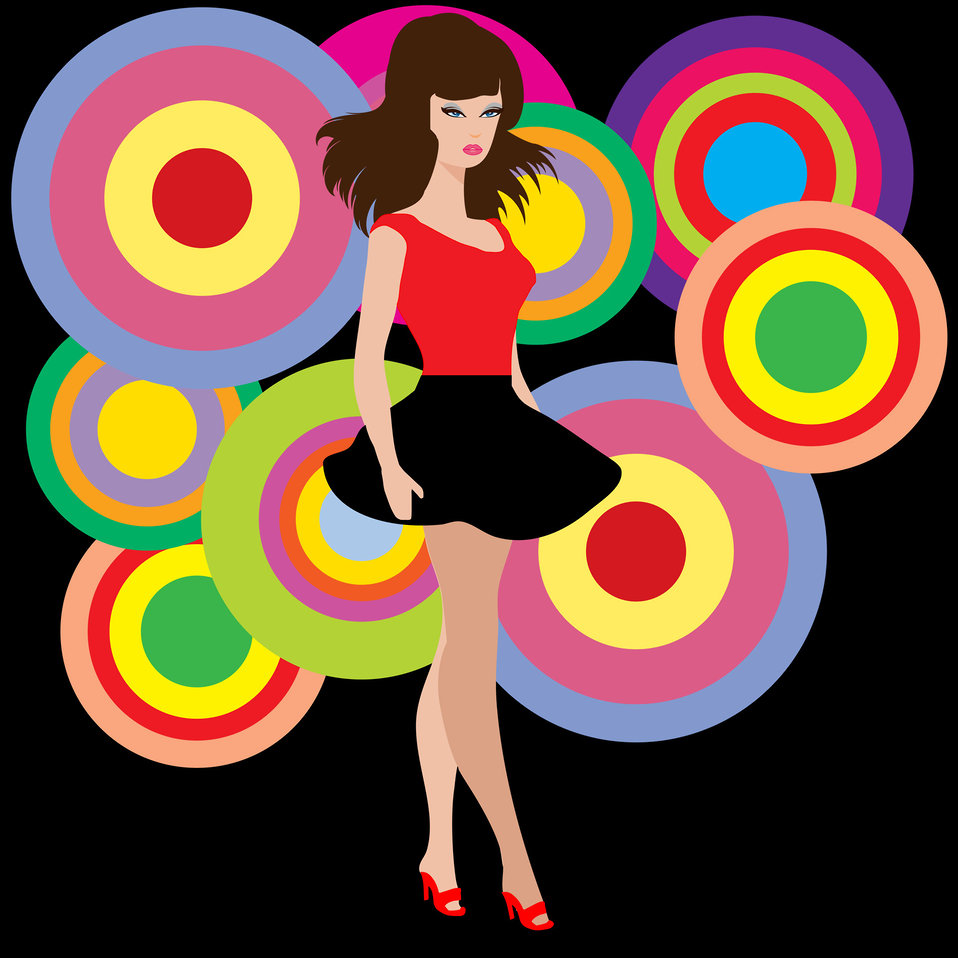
60s disco girl

60s retro disco party girl.